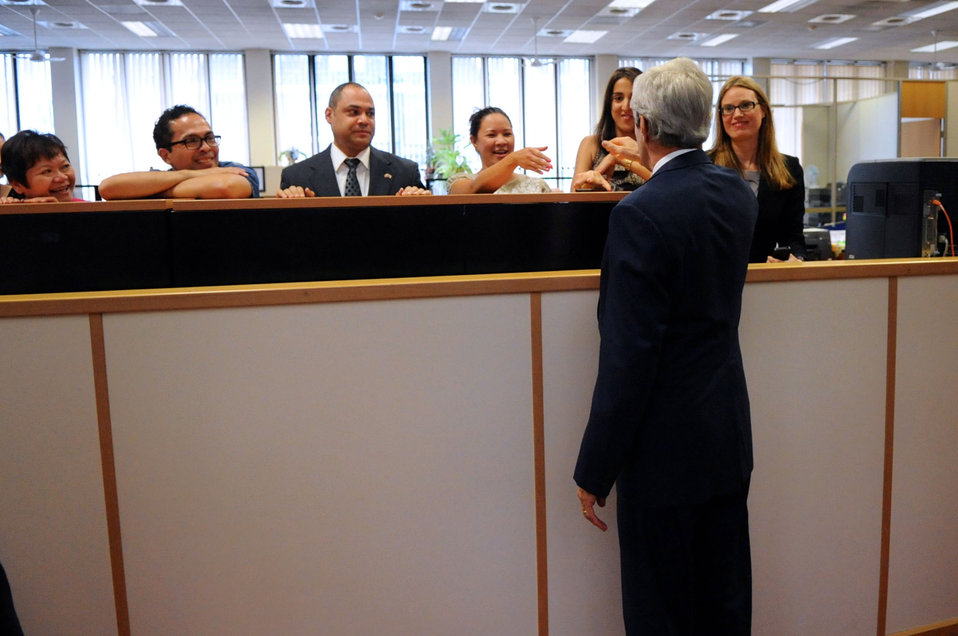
Secretary Kerry Shakes Hands With Embassy London Consular Staff

U.S. Secretary of State John Kerry shakes hands with employees in the Consular Affairs section during a visit to the U.S. Embassy in London, United Kingdom, to announce a visa policy change on August 2, 2013.